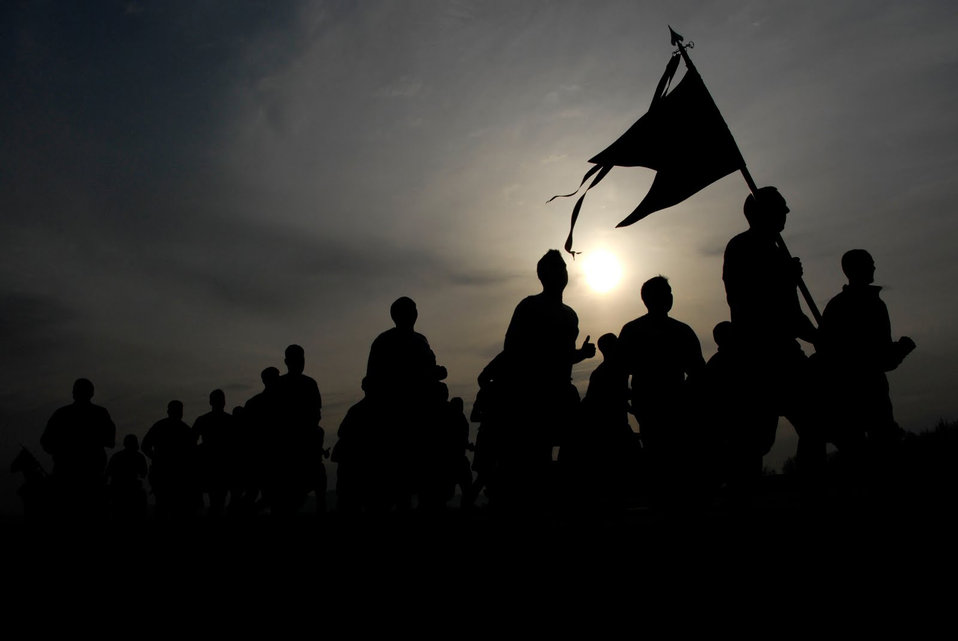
For a job well done

Airmen at Osan Air Base, Japan, participate in a 5k fun-run around the flightline May 6, 2011. The run was sponsored by base Air Force Assistant Fund coordinators to congratulate personnel on an exceptional AFAF participation. Donations brought in more than $131,000 dollars this year.